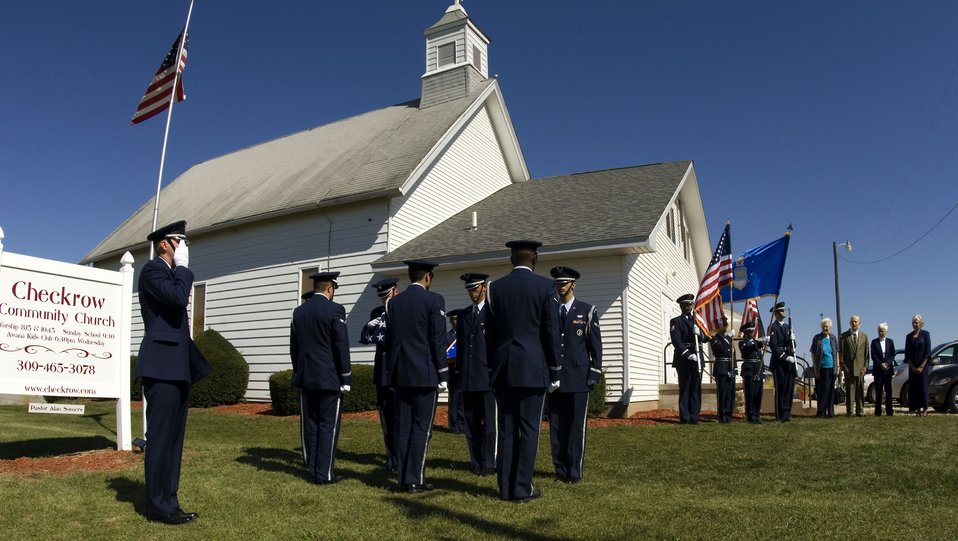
Siblings honor brother's sacrifice

Honor Guard members from Scott Air Force Base, Ill., conduct a flag ceremony Oct. 1 during services honoring 1st Lt. Bruce Sweney, an Air Force pilot who was shot down over North Korea in 1951. Lieutenant Sweney's brother and three sisters (far right) attended the service at a rural church near Avon, Ill., where the reconnaissance pilot grew up before entering the Air Force. He is one of 389 still listed as missing in action from the Korean War.